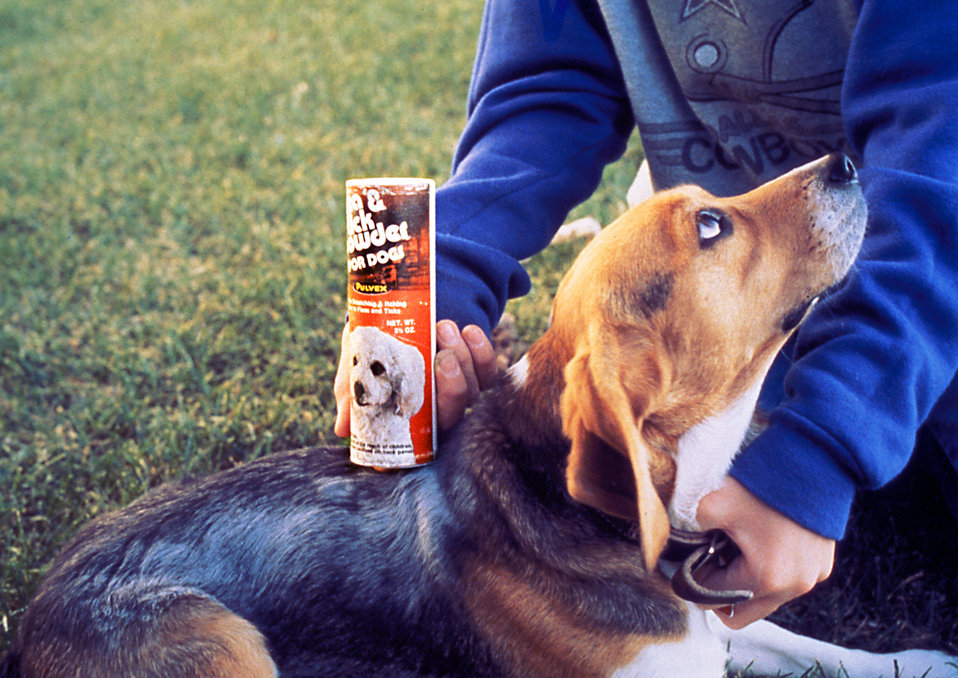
The pet beagle depicted here, was being treated with a flea and tick powder, which would kill any fleas or ticks on the pet, but not harm the dog.